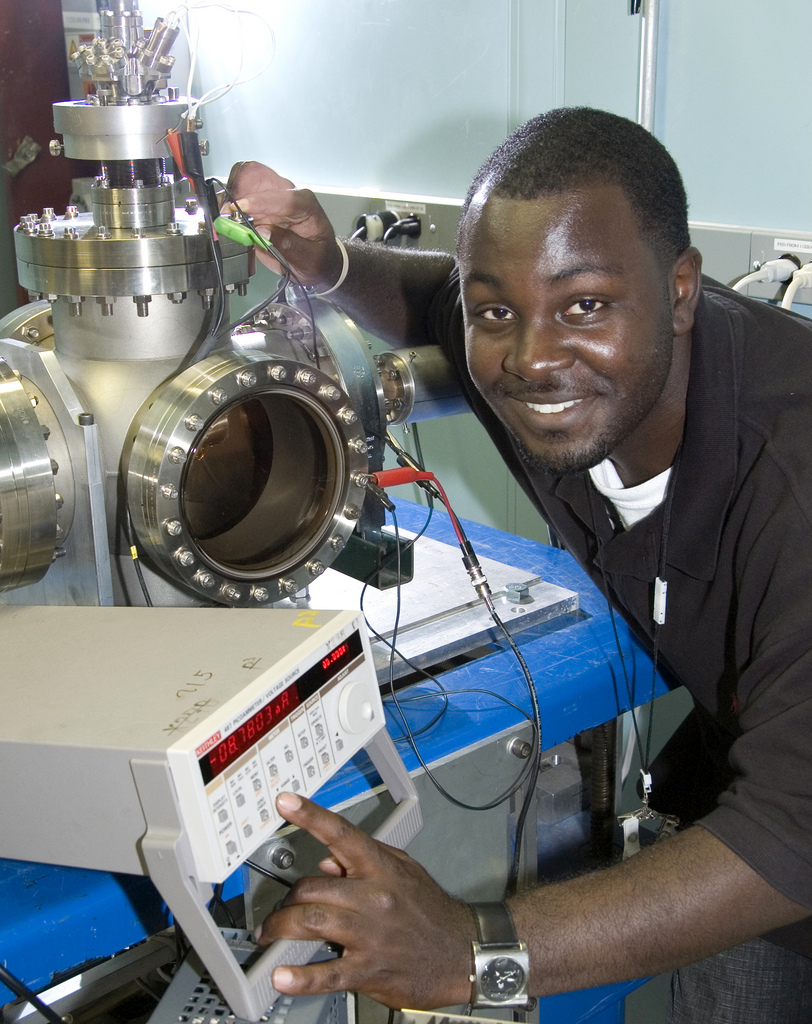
Educational programs, student at work in NSLS.